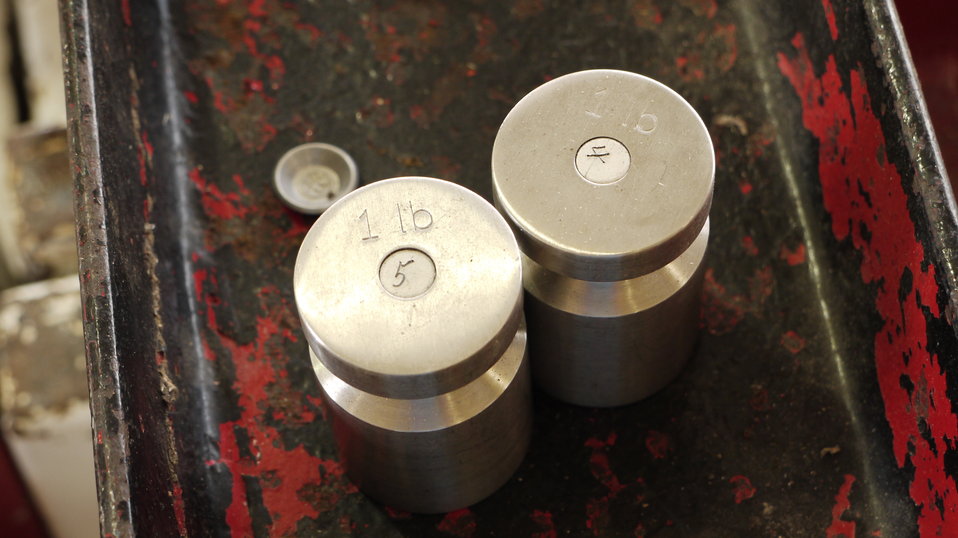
These are the correction weights used with U.S. Department of Agriculture’s (USDA) Grain Inspection, Packers, and Stockyard Administration (GIPSA) test weight standard group that brings the total group weight to an exact weight value in order to calibrate the grain elevator test weight. The U.S. Department of Agriculture’s (USDA) Grain Inspection, Packers, and Stockyard Administration (GIPSA) provides official testing of Automatic Bulk Weighing (Hopper) scales used in official certification of grain weight.